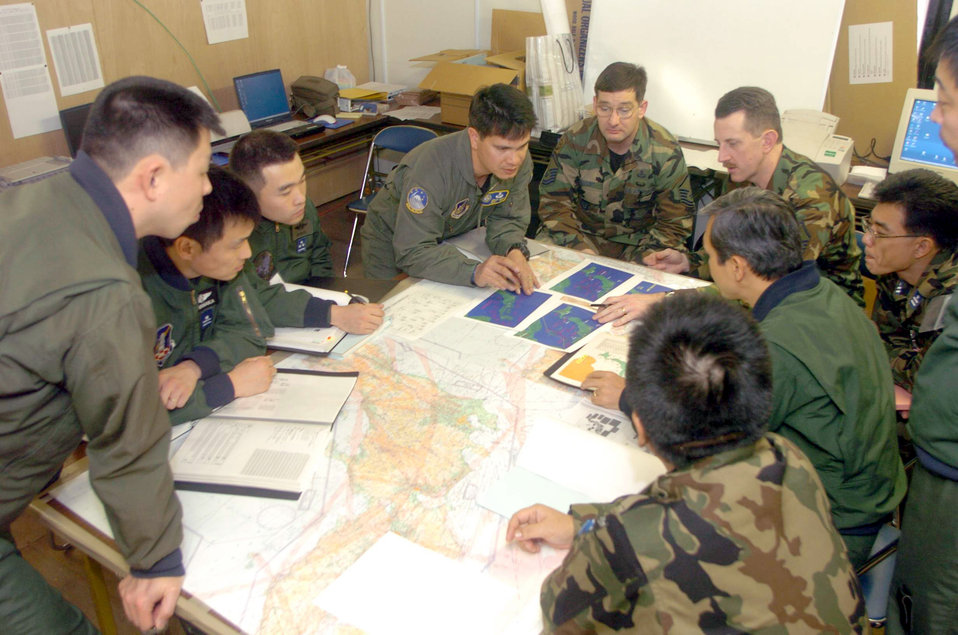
Meeting of the minds

CAMP ASAKA, Japan - Master Sgt Robert Hicks (center, wearing a flightsuit) briefs Japan self-defense forces on proper close-air support procedures before exercise Yama Sakura '04 begins here Jan. 25. Sergeant Hicks is a tactical air control party airman from 5th Air Force at Yokota Air Base, Japan.